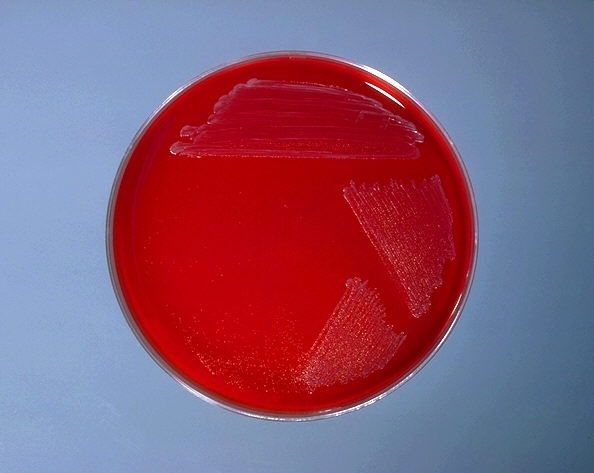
Blood agar plate culture of Corynebacterium pseudodiphtheriticum.